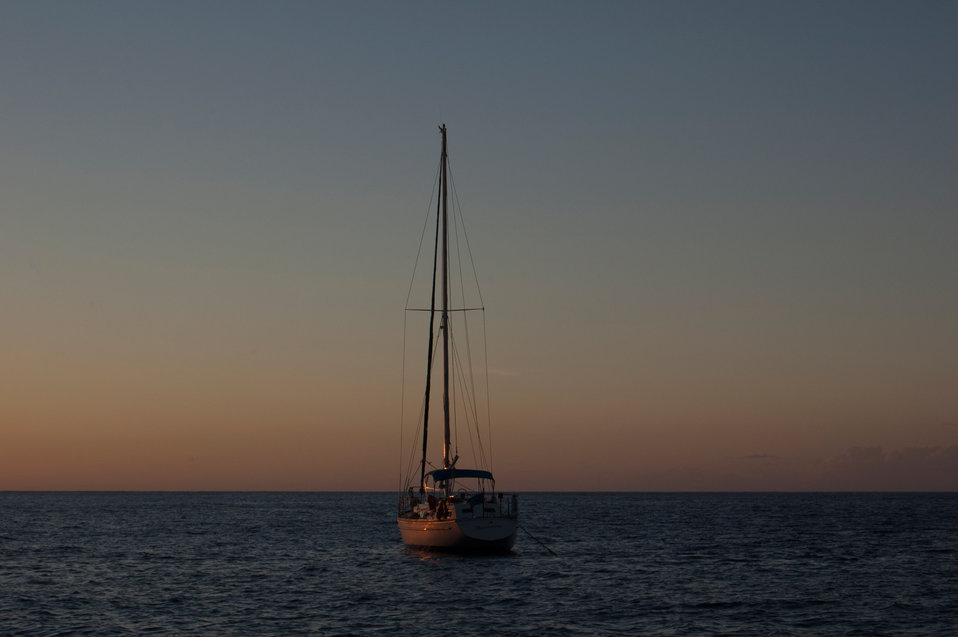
Lone boat

Lonely boat at sea during the evening.